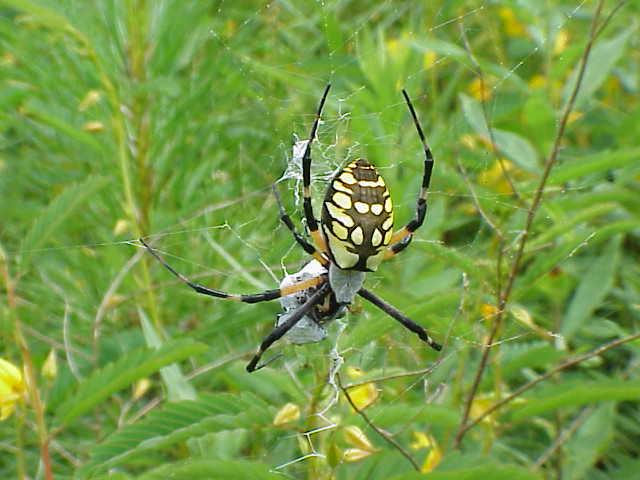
Black and yellow garden spider at Back Bay National Wildlife Refuge, VA.